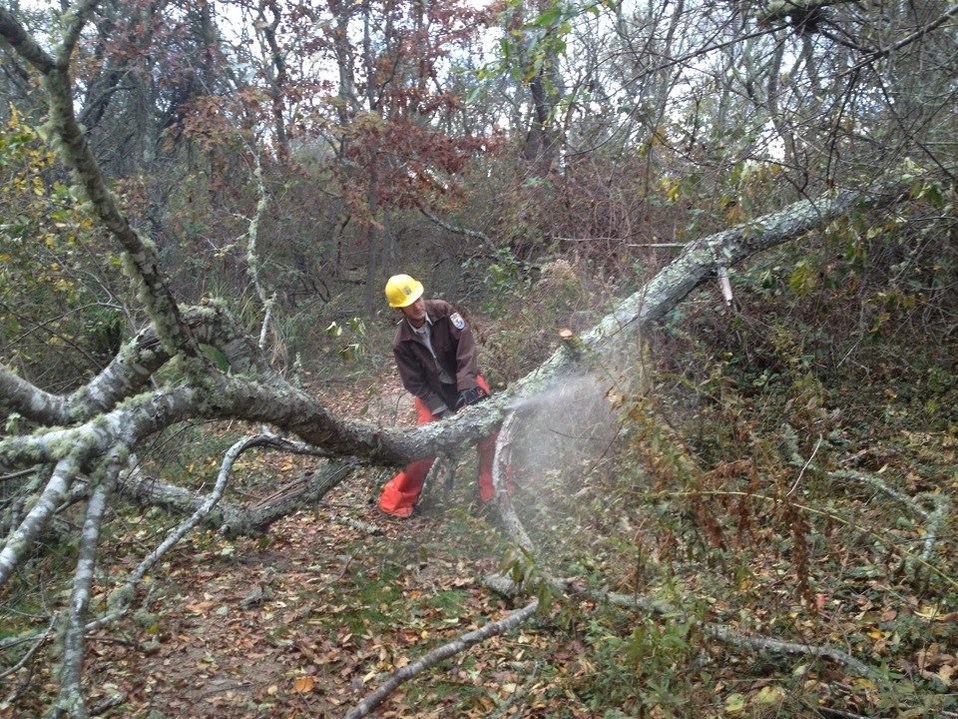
Tree clearing at Trustom Pond National Wildlife Refuge

Deputy Refuge Manager Juancarlos Giese works to clear a fallen tree from a trail at Trustom Pond National Wildlife Refuge after Hurricane Sandy.